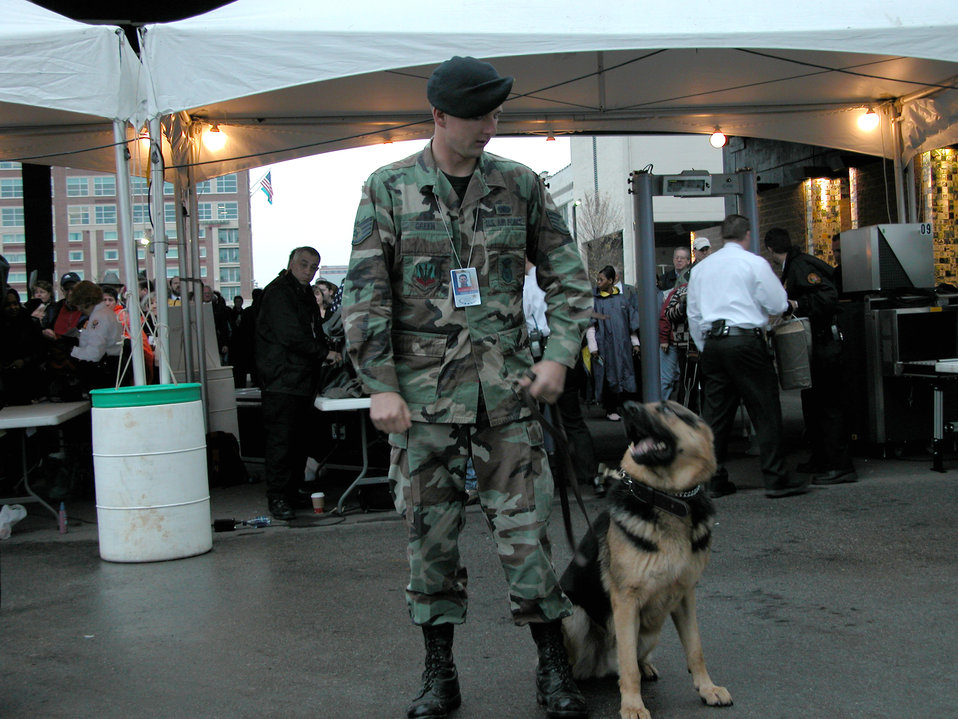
Air Force band performs at Clinton library opening

LITTLE ROCK, Ark. -- Staff Sgt. Gayden Green, a Barksdale Air Force Base, La., security forces journeyman, keeps his partner, Dax, in line as people file in for the William J. Clinton Presidential Library grand opening here Nov. 18. An estimated 30,000 people, including current President George W. Bush and former Presidents Jimmy Carter, George H.W. Bush and Bill Clinton attended the opening ceremonies.